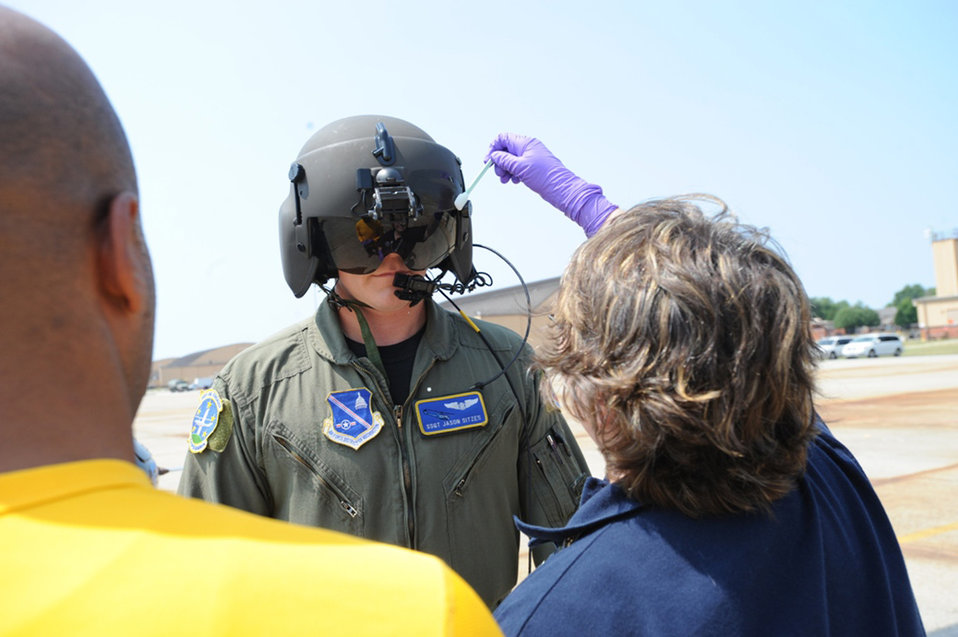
District of Washington officials provide fast, safe evacuation for biological attack exercise

Air Force District of Washington employee Debra Robinson swabs Staff Sgt. Jason Sitzles' flight helmet for bacterial contamination July 11 at the Pentagon. Sergeant Sitzles, from the 1st Helicopter Squadron on Andrews Air Force Base, Md., took part in a biological attack exercise and evacuation. Samples taken from the entire crew indicate the amount of contaminant they were exposed to during the evacuation. AFDW Airmen worked with 18 different state and federal agencies assisting the Pentagon Force Protection Agency in an Operational Response Test. The test was designed to provide first responders with information on the best methods to decontaminate people following a biological attack.